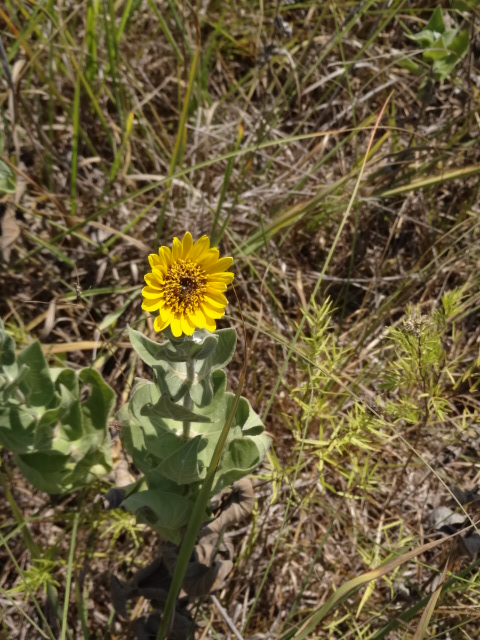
Prairie Wildflowers

Whole-leafed rosinweed (Silphium integrifolium) at Marais des Cygnes National Wildlife Refuge.